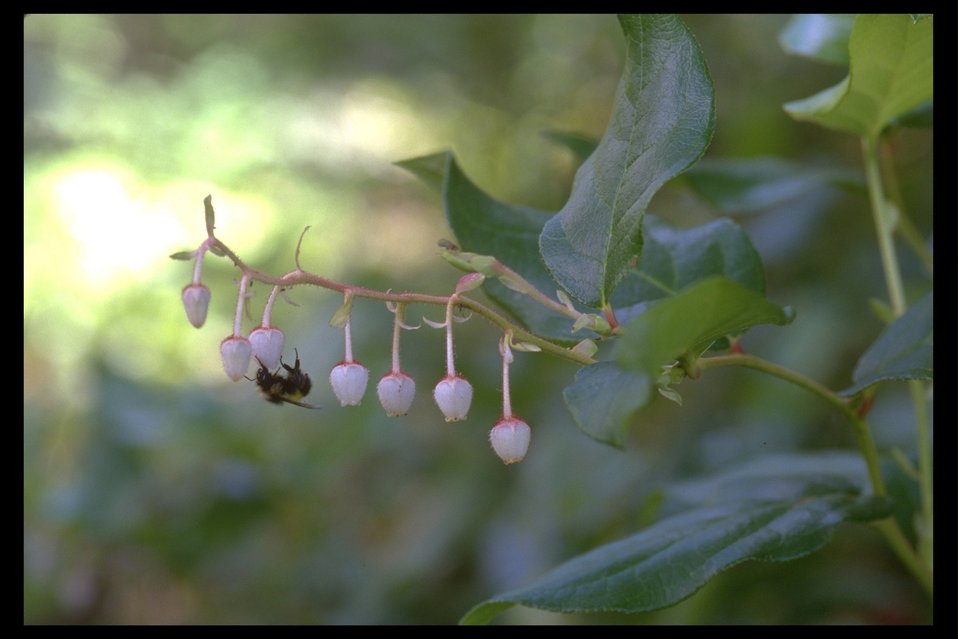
Salal (Gaultheria shallon) at Upper Trail Creek.